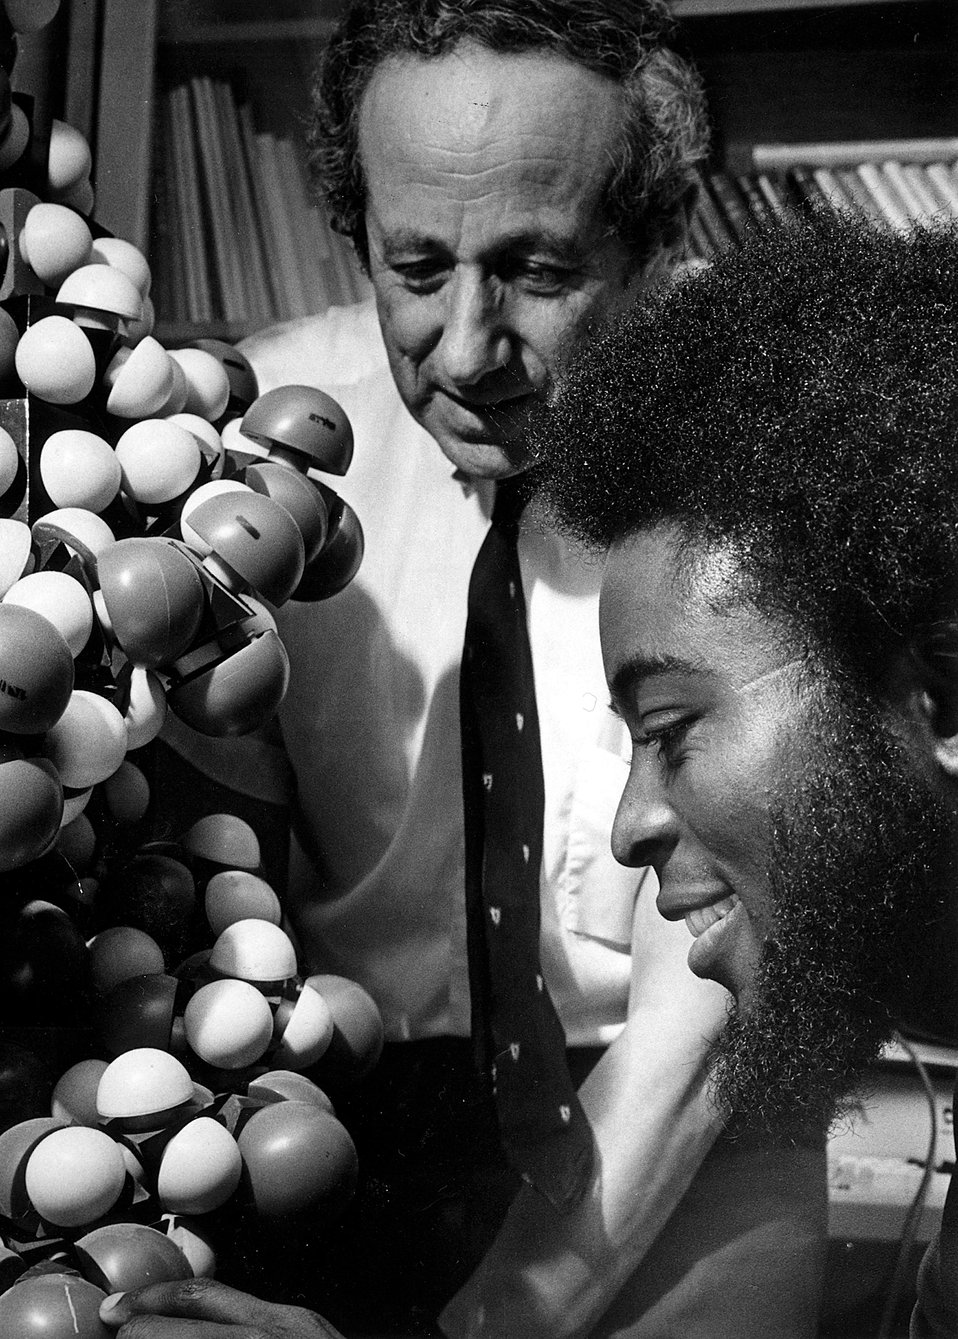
DNA model is explained to student by a member of the Brookhaven National Lab's medical dept.
June 21, 1974